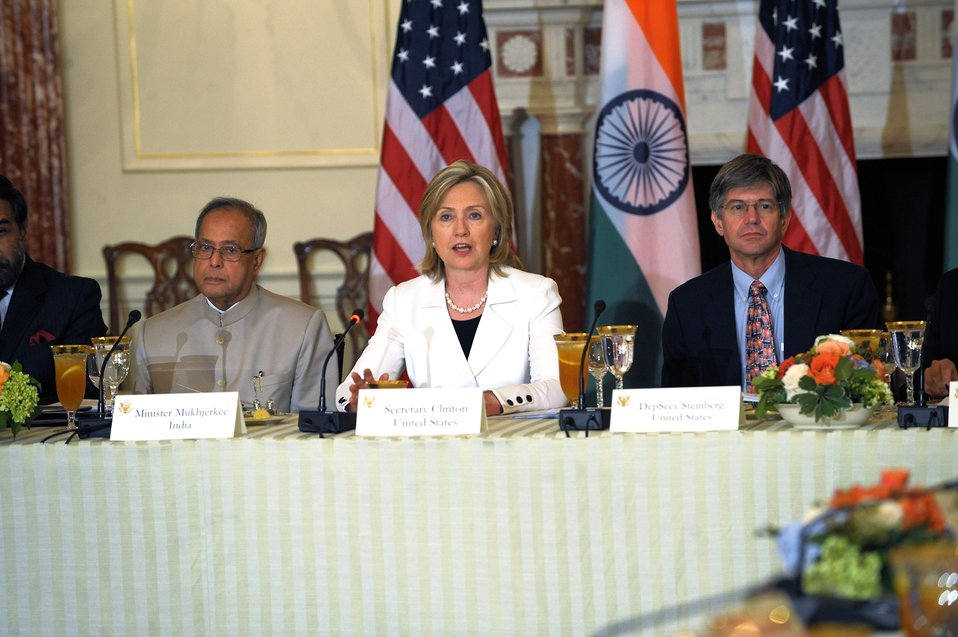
Secretary Clinton Delivers Welcoming Remarks at U.S.-India CEO Forum Luncheon

U.S. Secretary of State Hillary Rodham Clinton delivers opening remarks at a luncheon co-hosted by U.S. Deputy Secretary Jim Steinberg and U.S. Under Secretary for Economic, Energy and Agricultural Affairs Robert Hormats for the U.S.-India CEO Forum at the U.S. Department of State in Washington, D.C., on June 22, 2010.